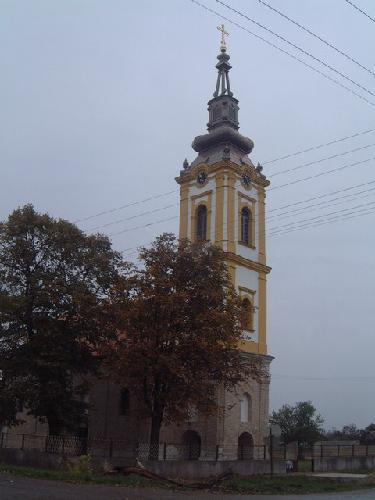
Serbian Orthodox Church in en:Bačinci, Serbia, Vojvodina/L'église orthodoxe serbe de fr:Bačinci, Serbie, Voïvodine